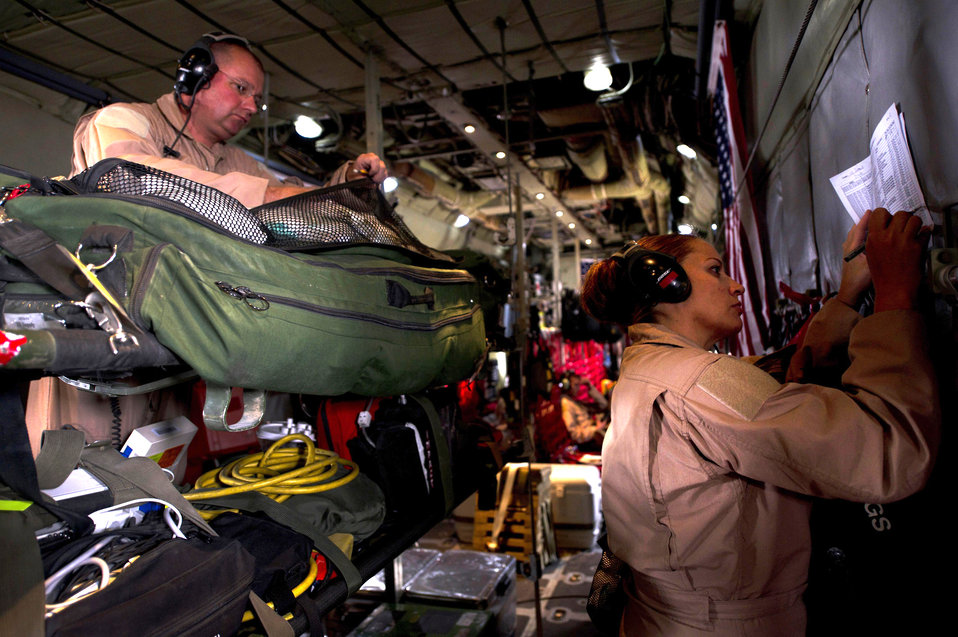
379th Expeditionary Aeromedical Evacuation Squadron

Master Sgt. James Bryon Freeman and Tech. Sgt. Rachel Anderson inventory medical equipment aboard a C-130 Hercules April 6, 2011, during an aeromedical evacuation mission in Southwest Asia. Sergeants Freeman and Anderson are aeromedical evacuation technicians assigned to the 379th Expeditionary Aeromedical Evacuation Squadron.